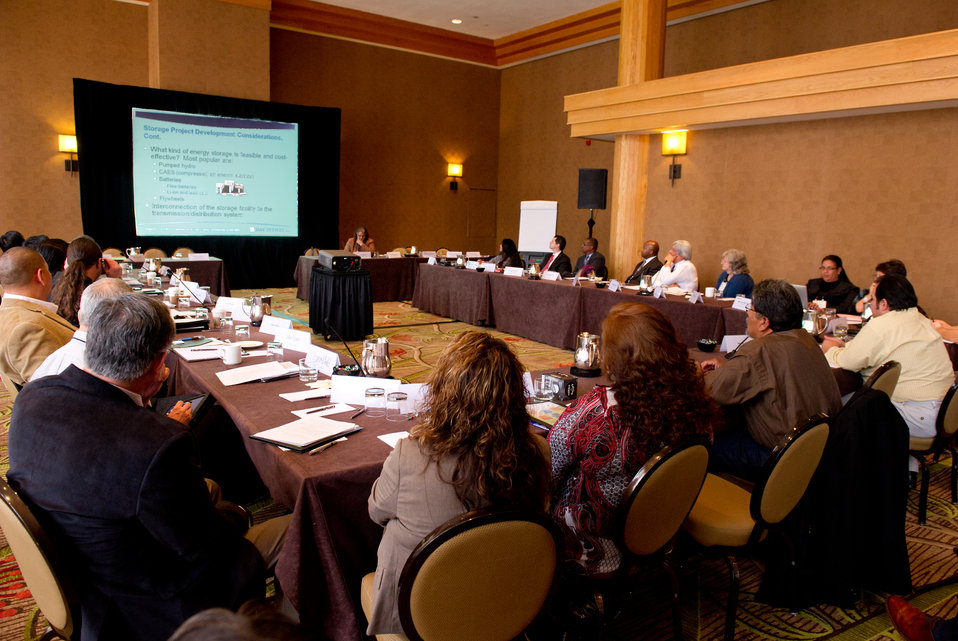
Indian Transmission Forum

February 7, 2012 - Attendees at the Office of Indian Energy Tribal Leader Energy Forum on transmission held February 2012 in Denver, Colorado.